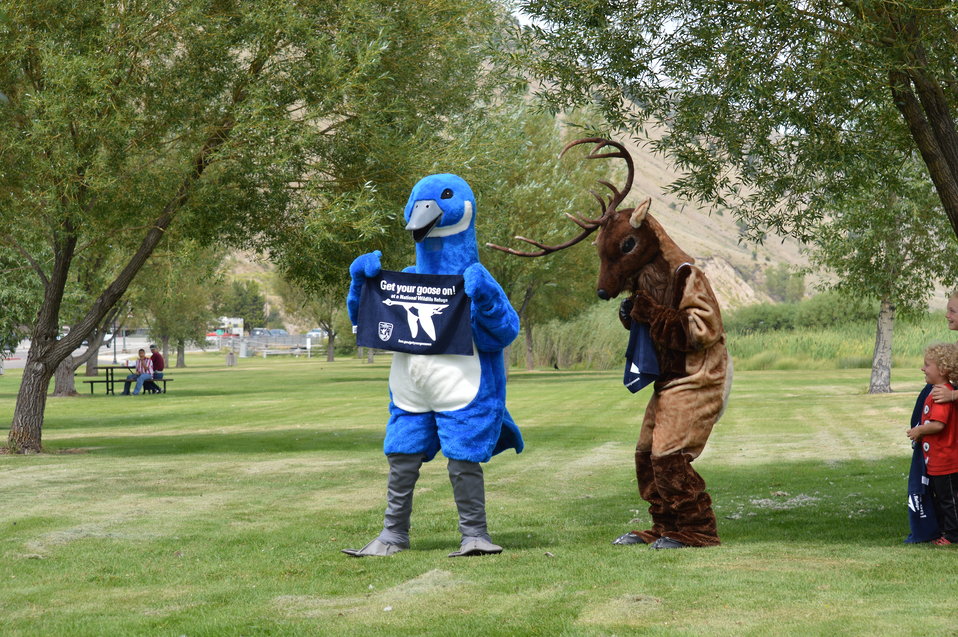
Get Your Goose On! - National Elk Refuge Style

On August 10, 2012 the U.S. Fish and Wildlife Service and Partners celebrated the 100 year anniversary of the establishment of the National Elk Refuge. In these photos, young attendees, along with Puddles the Blue Goose and the National Elk Refuge's mascot, showed us how to Get Your Goose On! with style.